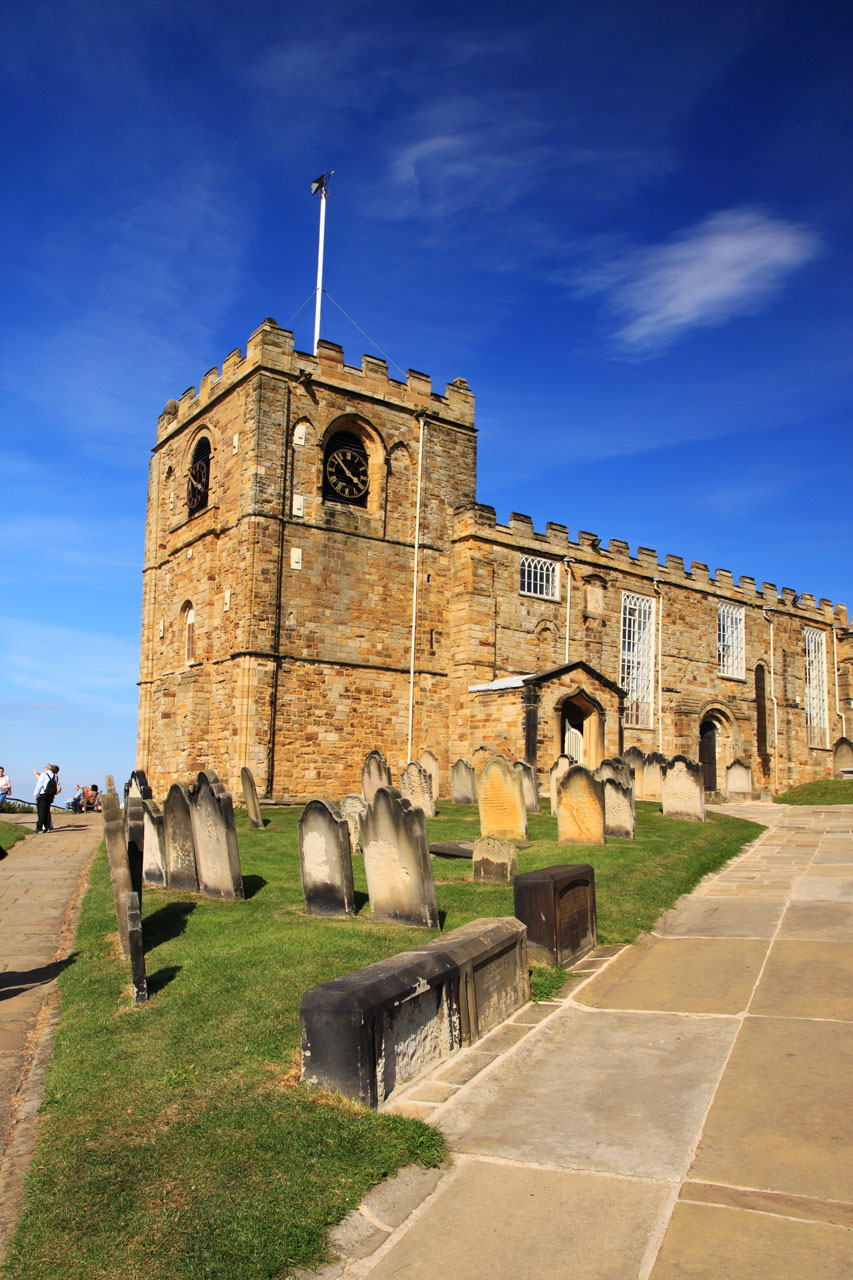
Gravestones and church in whitby.